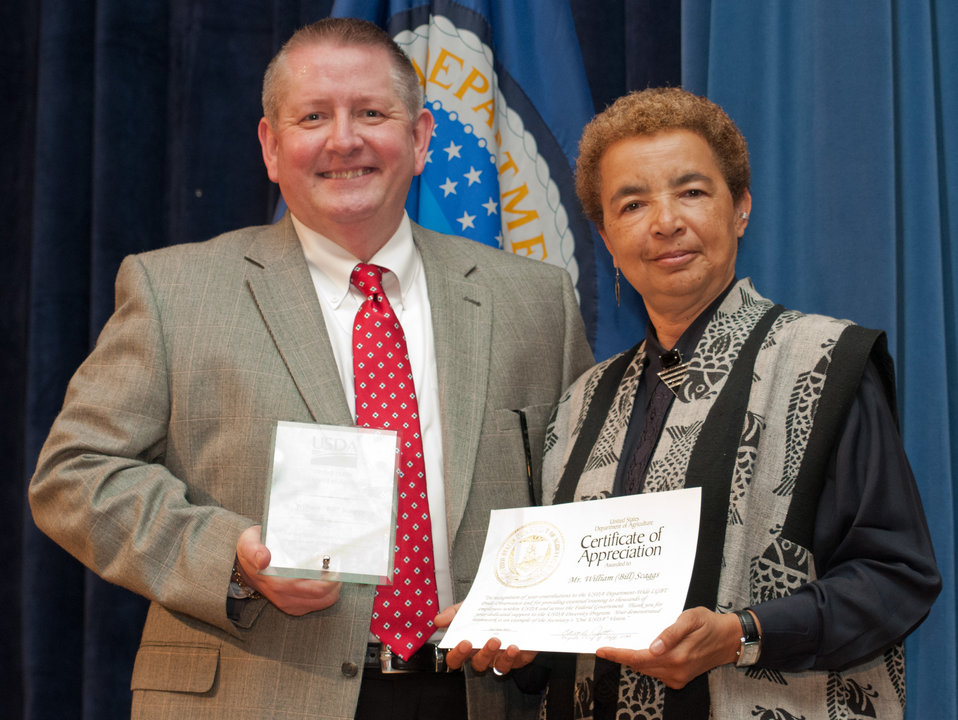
U.S. Department of Agriculture (USDA) Natural Resources Conservation Service (NRCS) Lesbian, Gay, Bisexual and Transgender (LGBT) Special Emphasis Program Manager Sharon Nance (right) presents National Office of the Assistant Secretary for Civil Rights Senior Training Specialist Bill Scaggs (left) the USDA LGBT Special Emphasis Award during the LGBT Pride Observance Program, on Thursday, June 2, 2011 in the Jefferson Auditorium, Washington, DC.